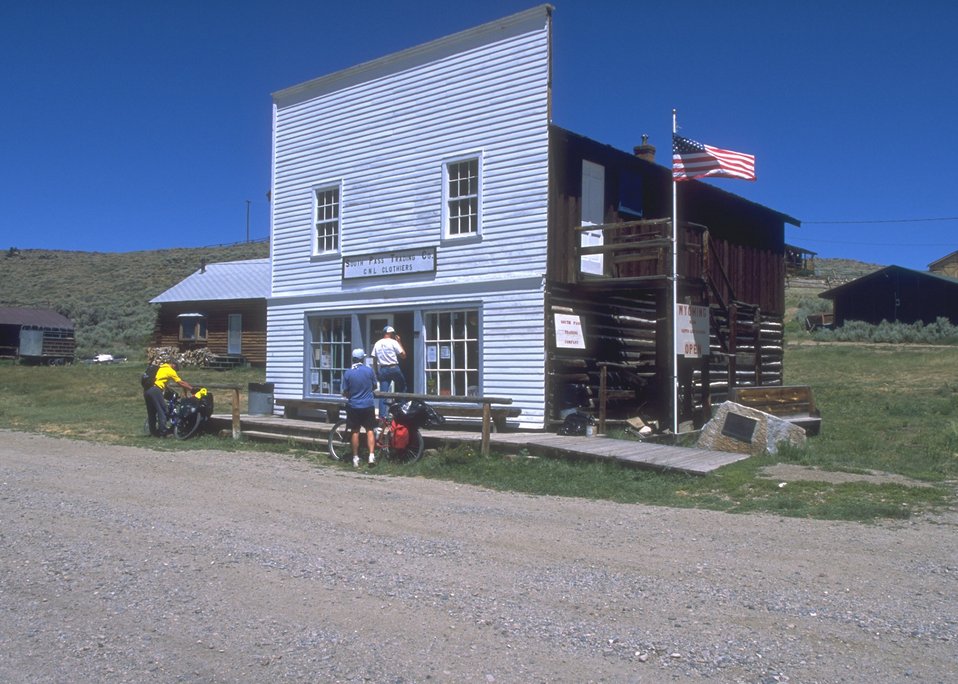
Bikers taking a break at South Pass City, Lander Field Office.